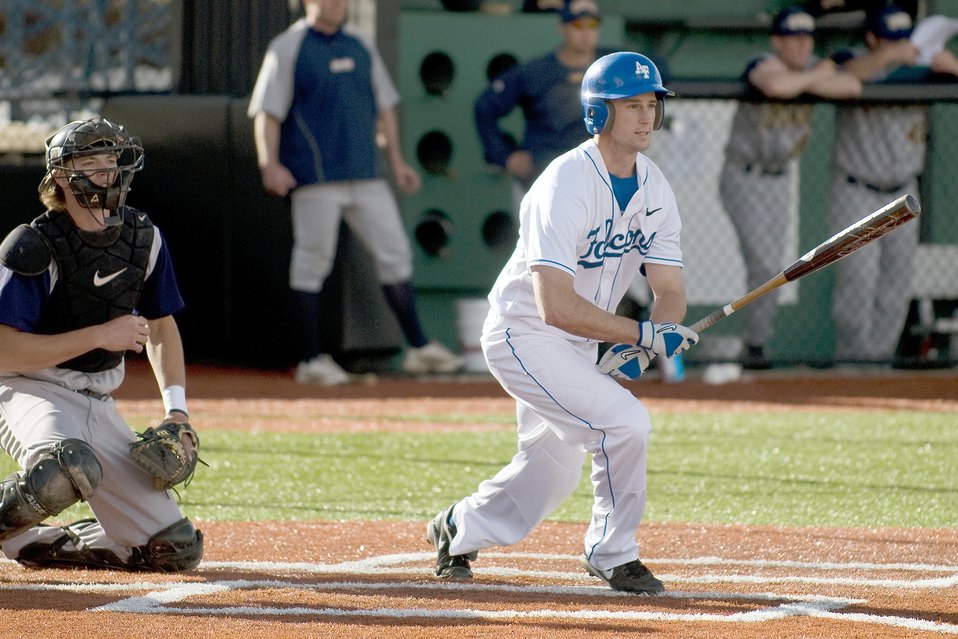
Falcons defeat the Cougars

Air Force senior first baseman Addison Gentry watches the ball sail to the outfield for one of his four RBIs during the Falcons March 30, 2010 contest against Colorado Christian University held at the U.S. Air Force Academy's Falcon Field in Colorado. The Falcons defeated the Cougars 25-7.